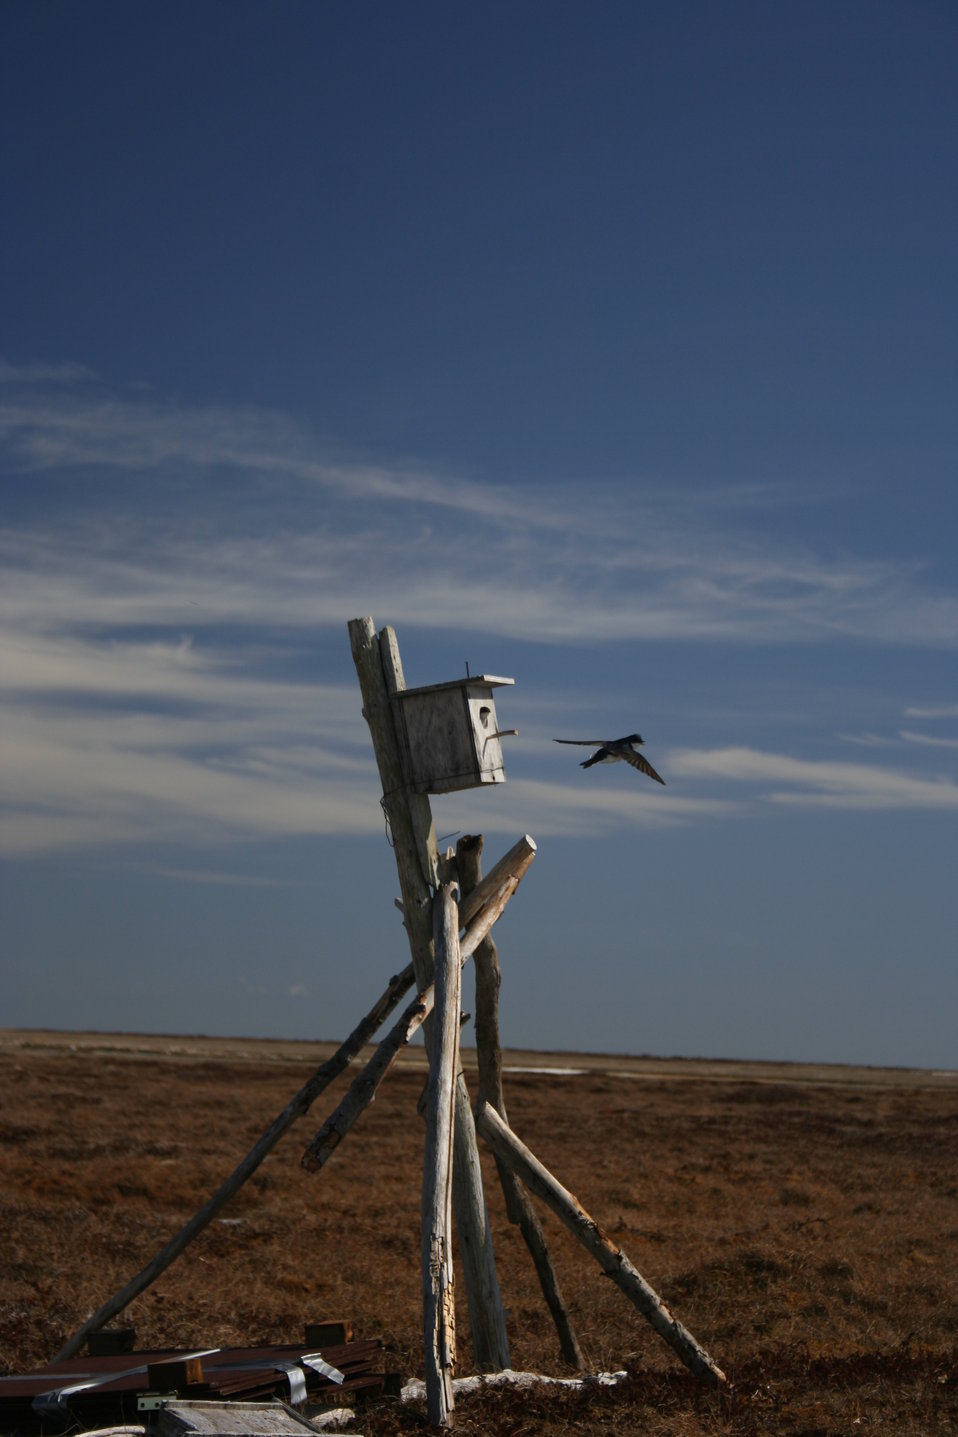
Tree swallow box

Many of the field stations have bird houses for tree swallows and other passerines that may be in the project area.

USFWS Yukon Delta NWR